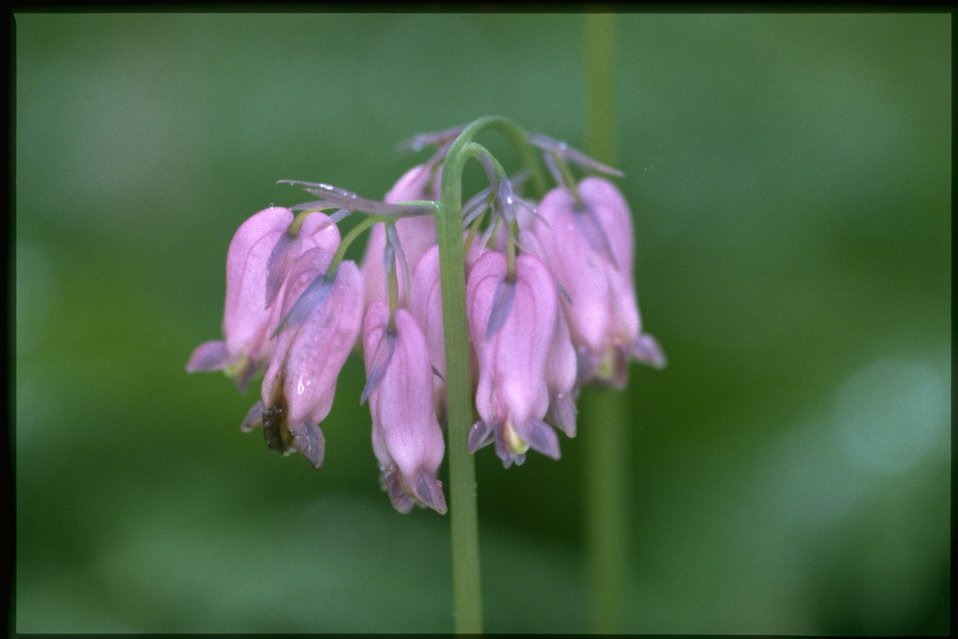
Closeup shot of Pacific Bleeding Heart wildflower (Dicentra formosa).